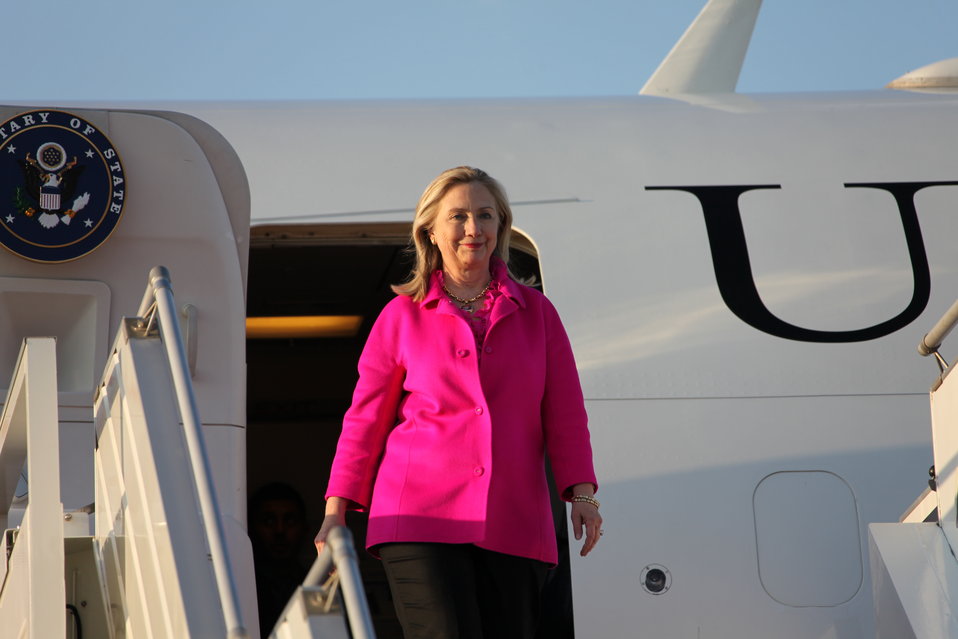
Secretary Clinton Arrives in Nay Pyi Taw

U.S. Secretary of State Hillary Rodham Clinton arrives in Nay Pyi Taw to begin her historic visit to Burma on November 30, 2011.